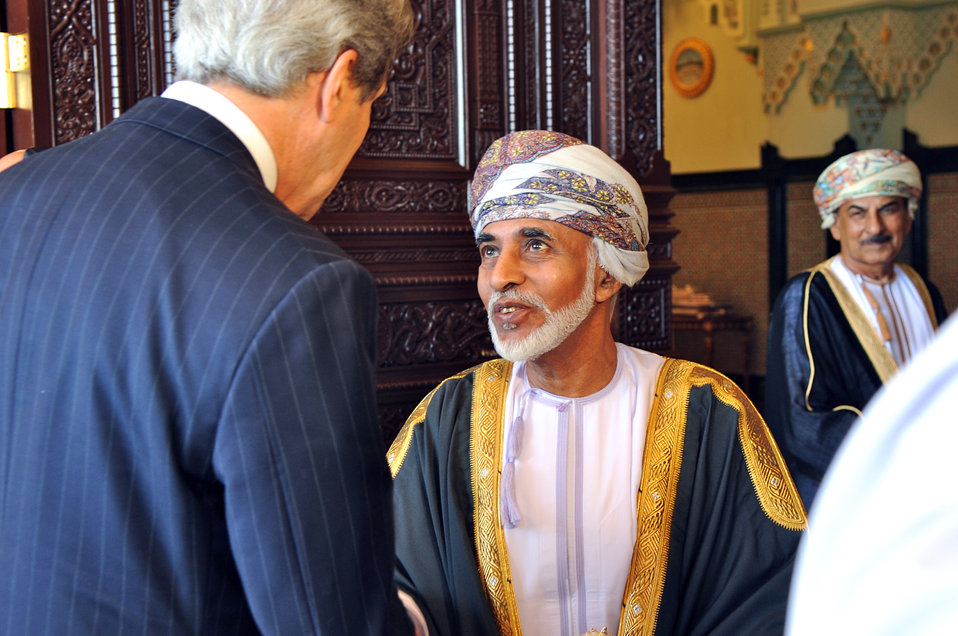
Secretary Kerry Meets With Omani Sultan Qaboos bin Said Al Said

U.S. Secretary of State John Kerry meets with Sultan of Oman Qaboos bin Said Al Said in Muscat, Oman, on May 21, 2013.